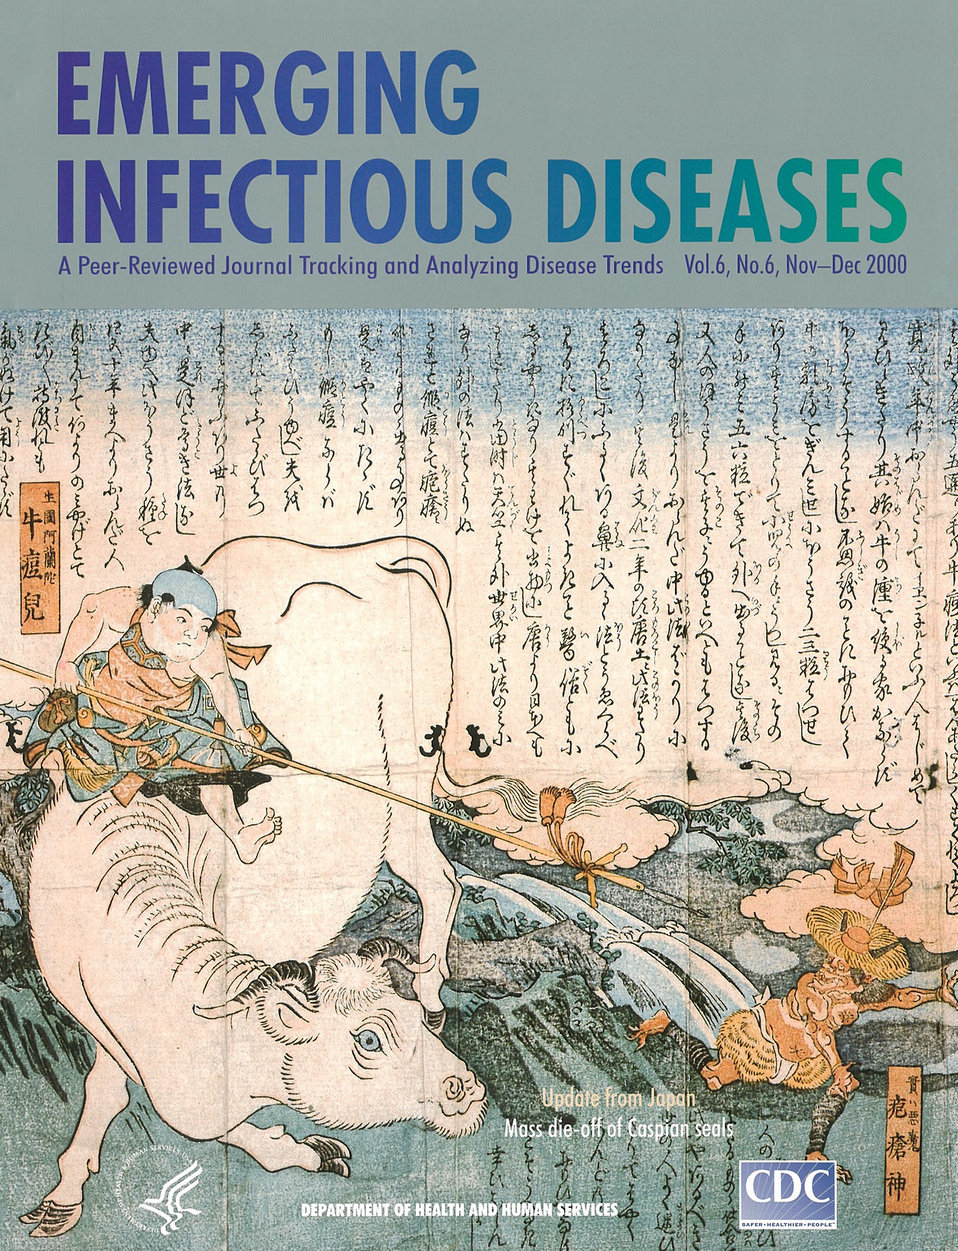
Emerging Infectious Diseases (EID) cover artwork for Volume 6, Number 6, November-December 2000 issue.